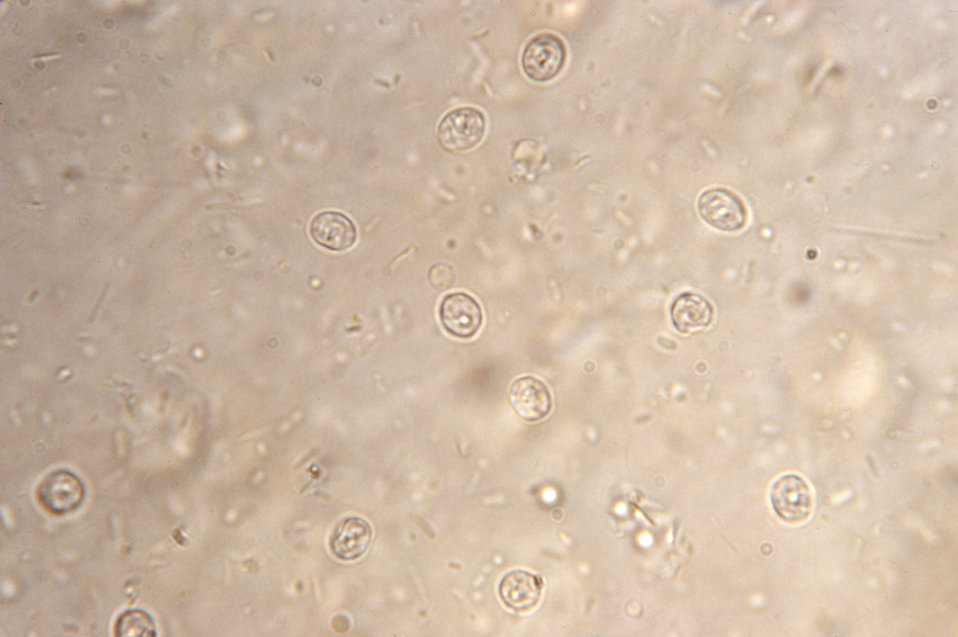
This was a stool smear micrograph revealing Cryptosporidium parvum as the cause of this patient's Cryptosporidiosis.